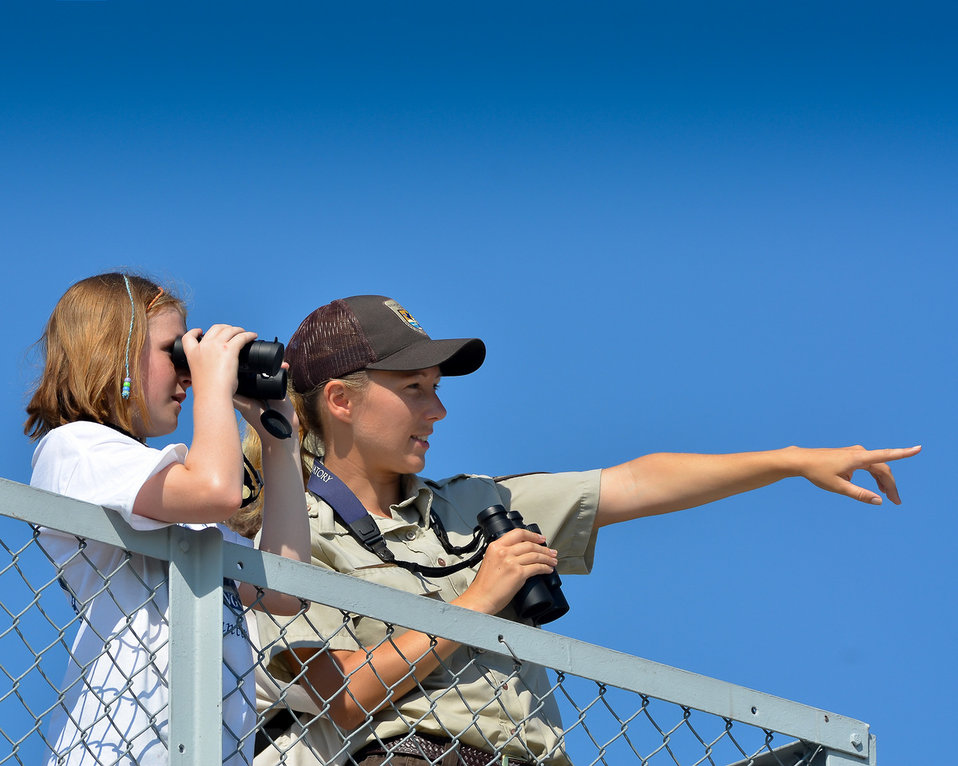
Learning Her Birds

Bird watching at Edwin B. Forsythe National Wildlife Refuge.